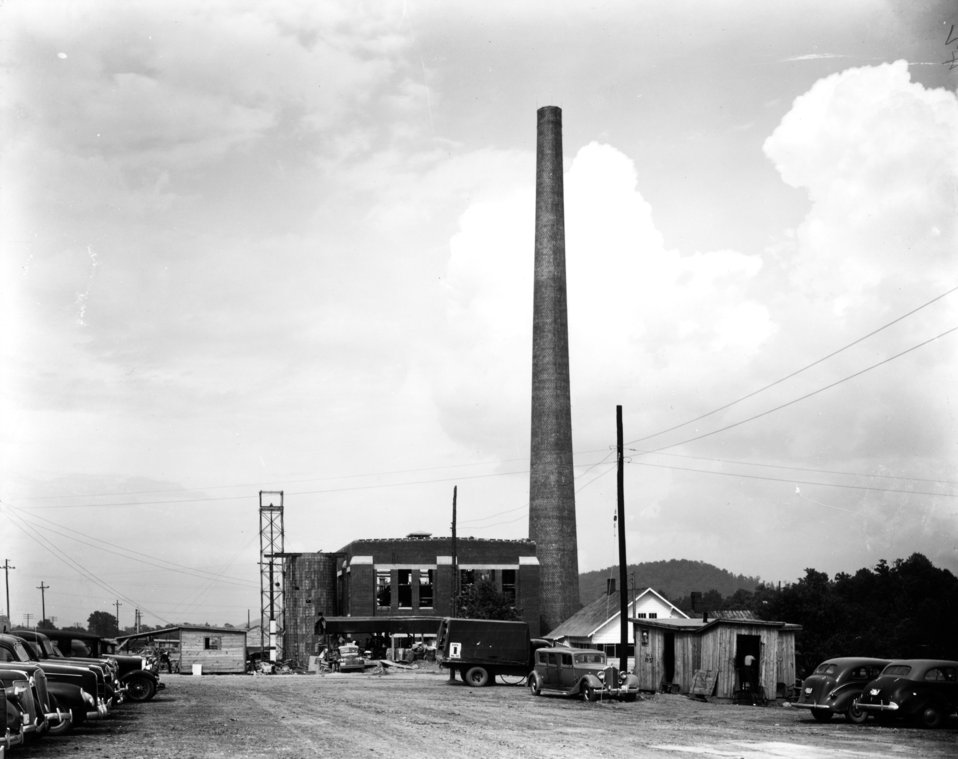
Construction activity at Oak Ridge